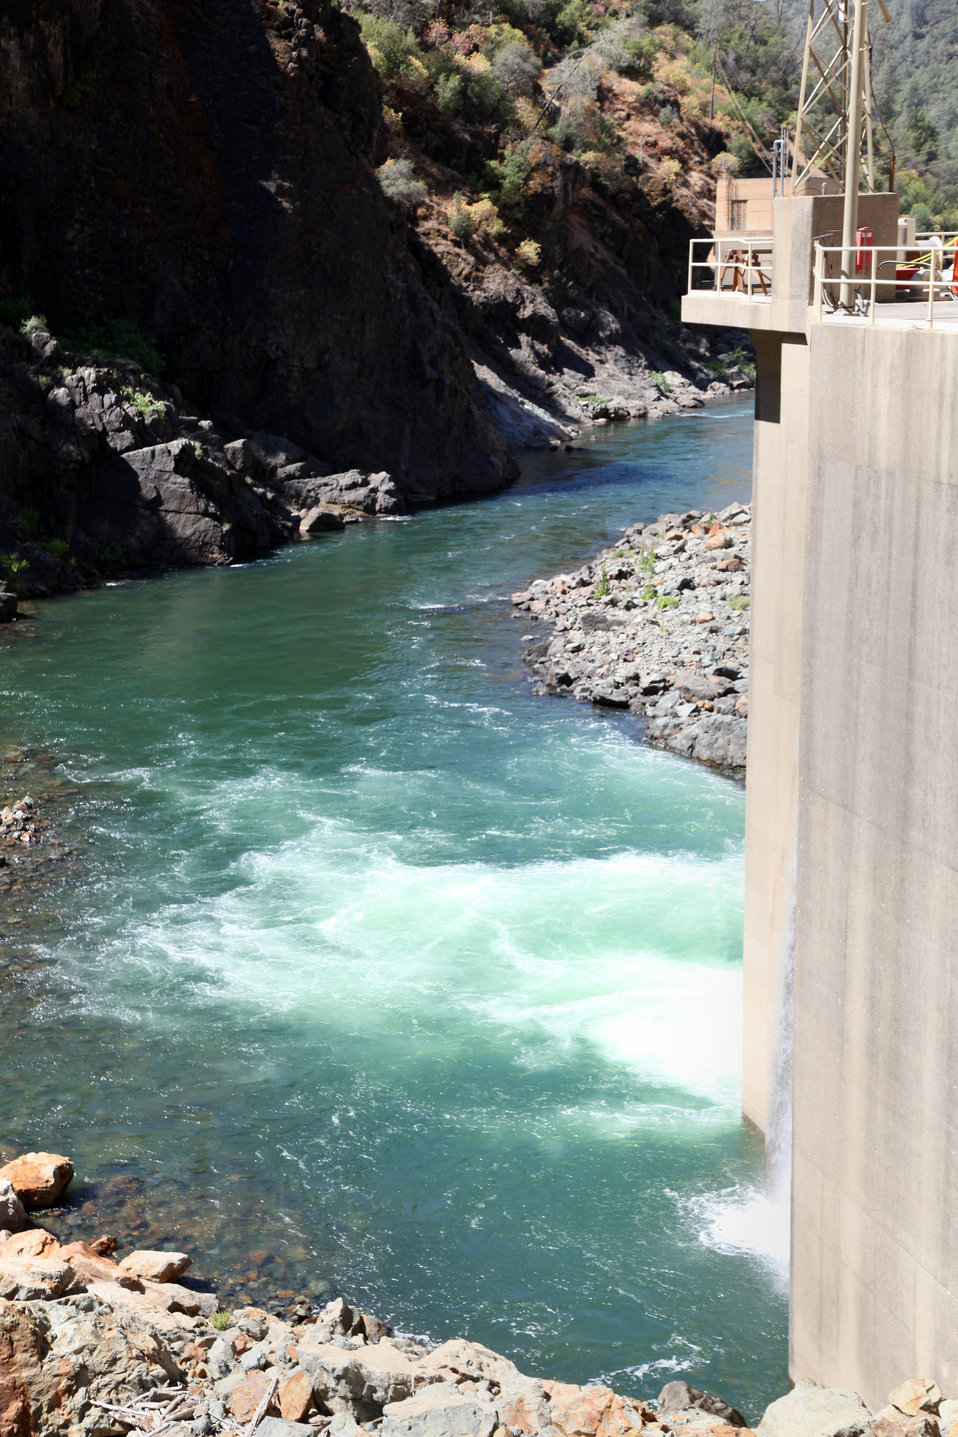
Corps reconnaissance team tours Yuba River

Yuba River water emerges from one of the two power-generating structures immediately downstream of Englebright Dam. Members of the U.S. Army Corps of Engineers Sacramento District team assessing possible federal projects for ecosystem restoration along Northern California's Yuba River reviewed the water’s route from Daguerre Point Dam up to Downieville on a site visit June 18, 2014. The Corps team was accompanied by members of the Yuba County Water Agency and several YCWA consultants in this initial trip to gather data on the overall state of the Yuba and water facilities along the route.